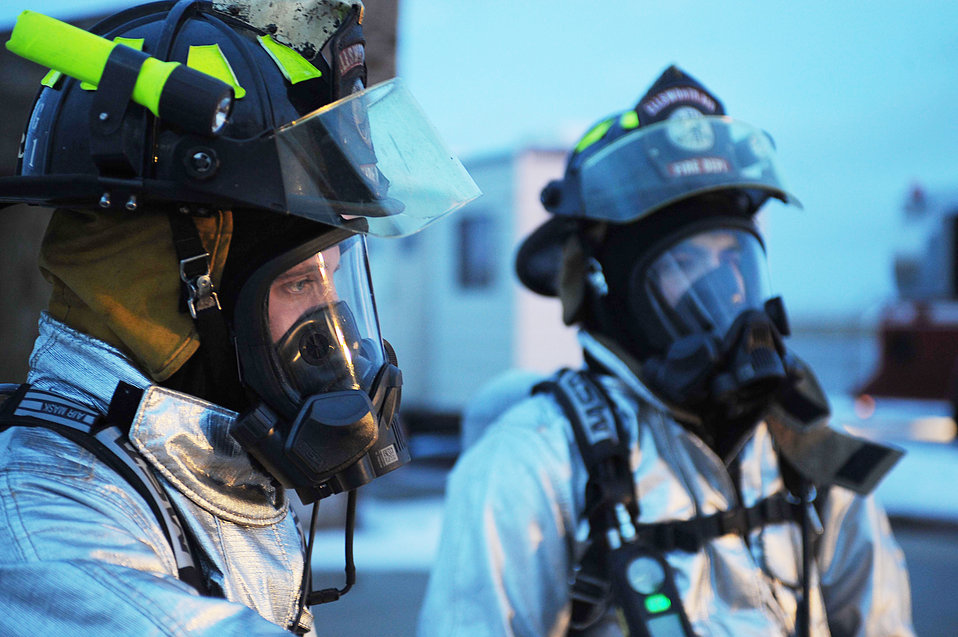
Ellsworth firefighters train at night

Senior Airmen Jared Manning (left) and John Vasquez stand ready to participate in the night fire training exercise, Feb. 17, 2010, at Ellsworth Air Force Base, S.D. The Airmen are firefighters with the 28th Civil Engineer Squadron.